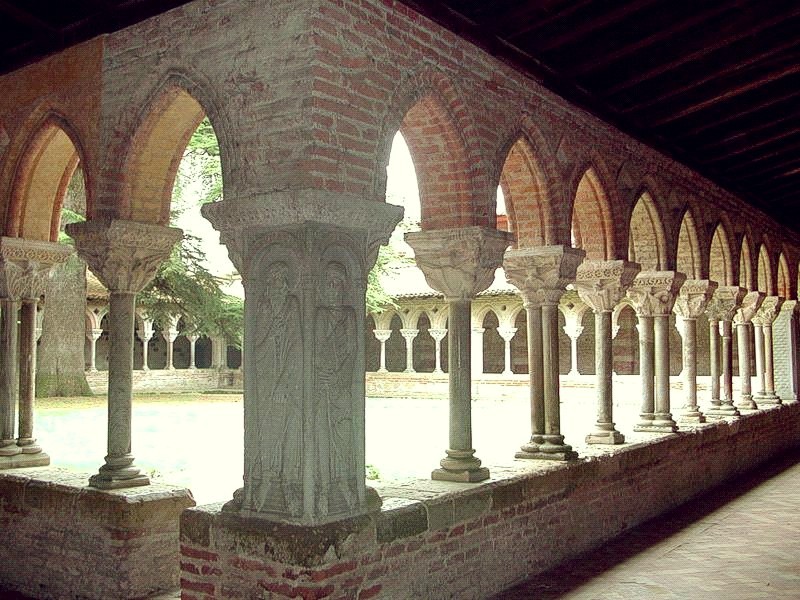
Cloître de l'abbaye de Saint-Pierre de Moissac, St Jacques avec sa barbe pointue et saint Jean aux pieds nus (à droite)